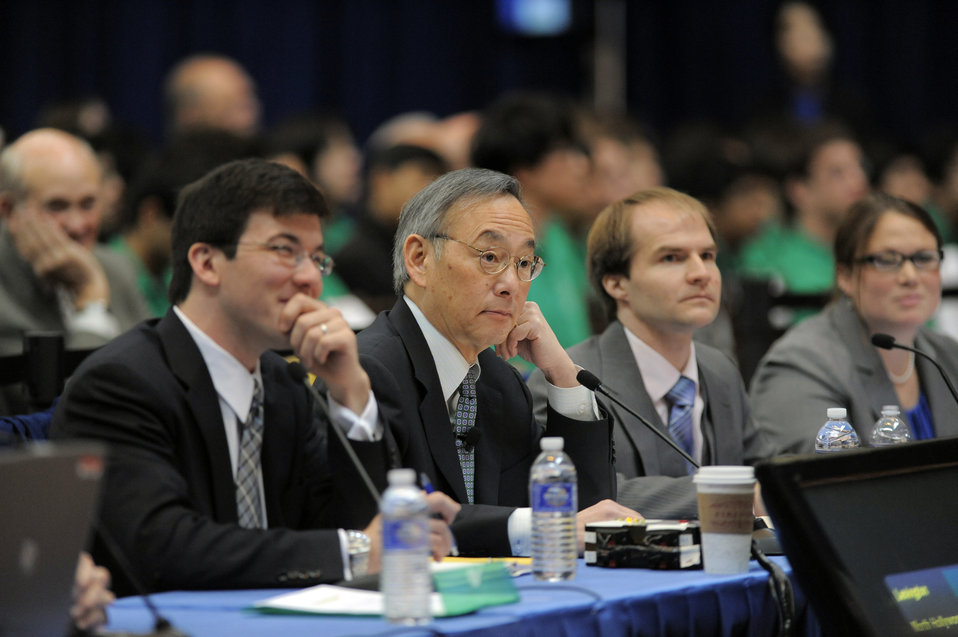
Secretary of Energy Steven Chu participated at the 2012 National Science Bowl as a judge during the two championship matches on April 30, 2012.

DOE created the National Science Bowl in 1991 to encourage students to excel in mathematics and sciences and to pursue careers in these fields. The department supports mathematics and science education to help provide a technically trained and diverse workforce for the nation. More than 2000,000 students have participated in the National Sciences Bowl throughout its history.